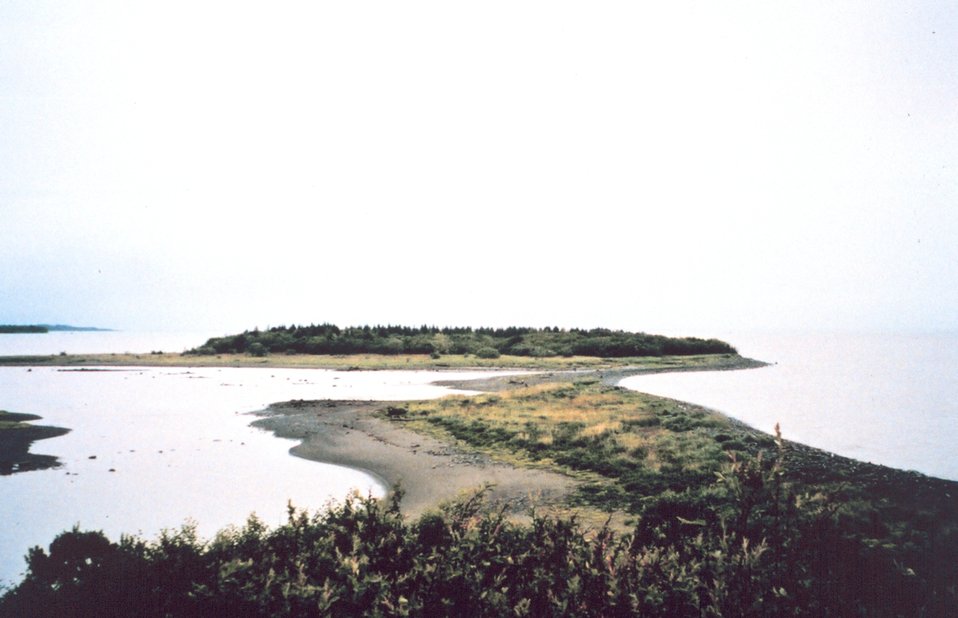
Sand spit